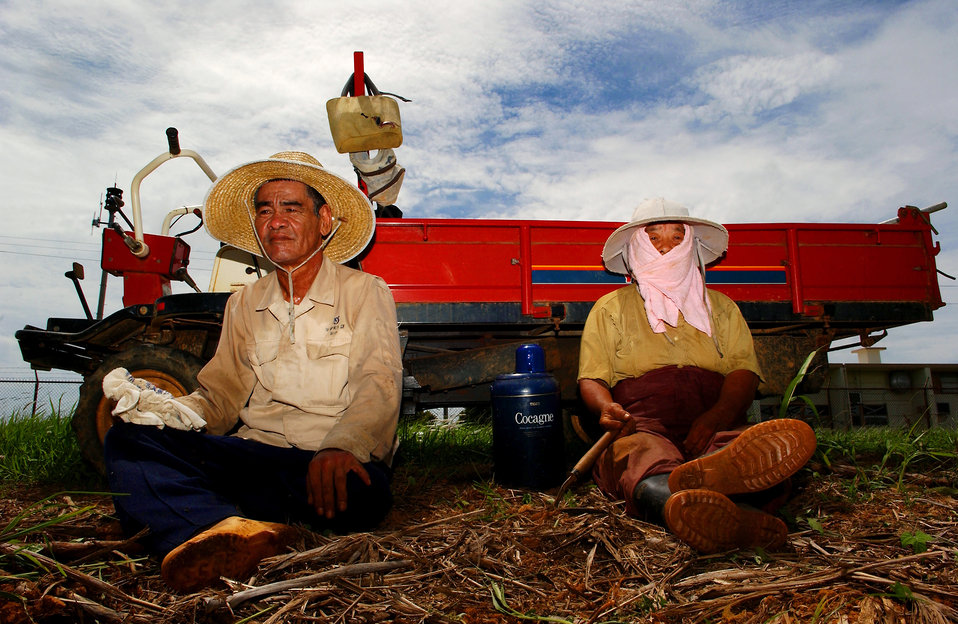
Tacit farmers return to their roots at air base

A tacit farmer couple takes a brief moment to rest from the summer heat and humidity after working in the sugarcane field at Kadena Air Base, Japan. Each day they devote themselves to the cultivation of their crops in an area fenced-in and well-guarded.